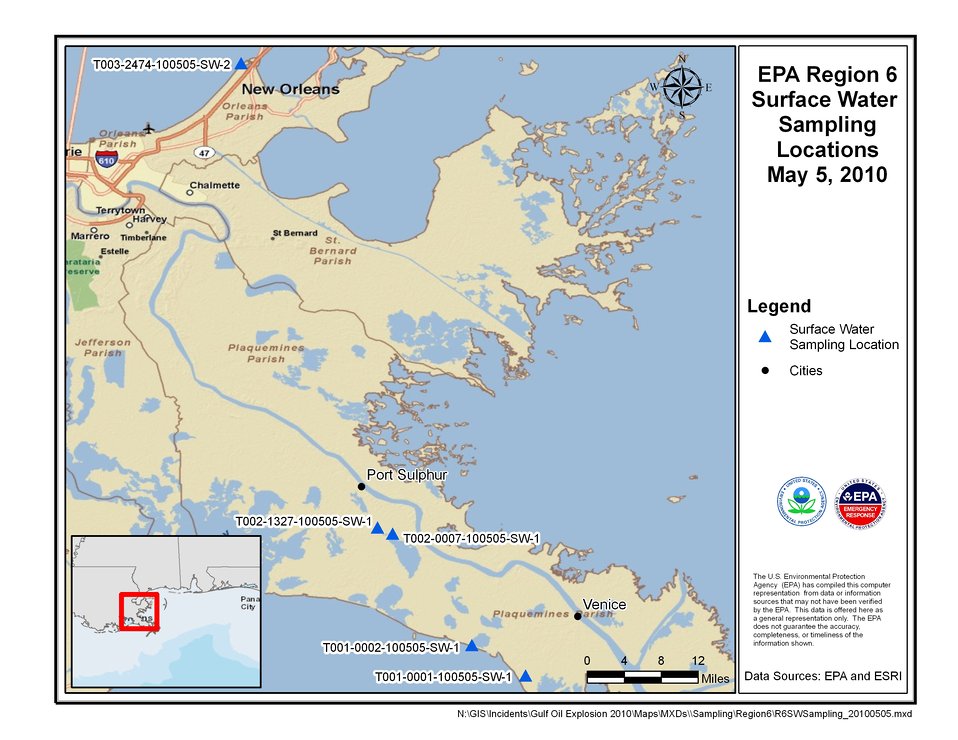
EPA Water Sampling Locations May 5, 2010